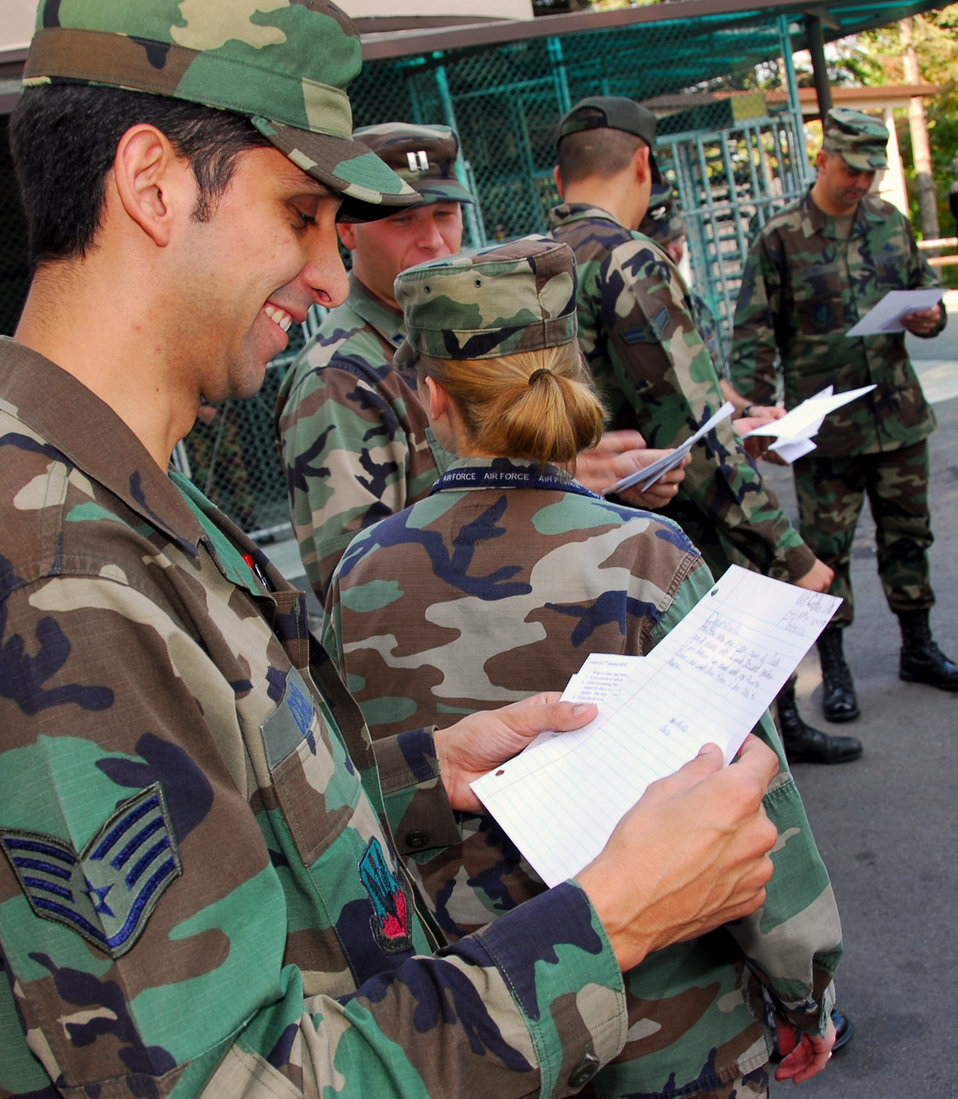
By the letter: Airmen help students by being pen pals

Staff Sgt. Chris Cugier reads a letter from his new 2nd grade pen pal Oct. 26 at Osan Air Base, Republic of Korea. An Osan AB Airman and a teacher from Delmae Heights Elementary School in Florence, S.C., worked together to create a program in which her students and Osan AB Airmen will be pen pals for one year. Sergeant Cugier is with the 607th Air Operations Center.